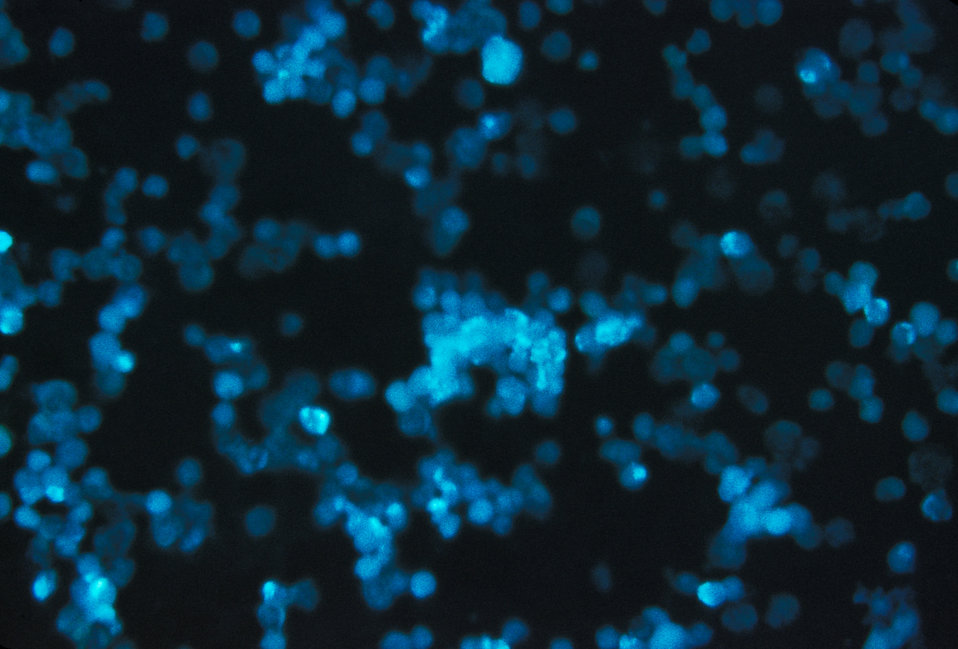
A photomicrograph of leukemia cells using Direct Fluorescent Antibody staining technique (DFA).